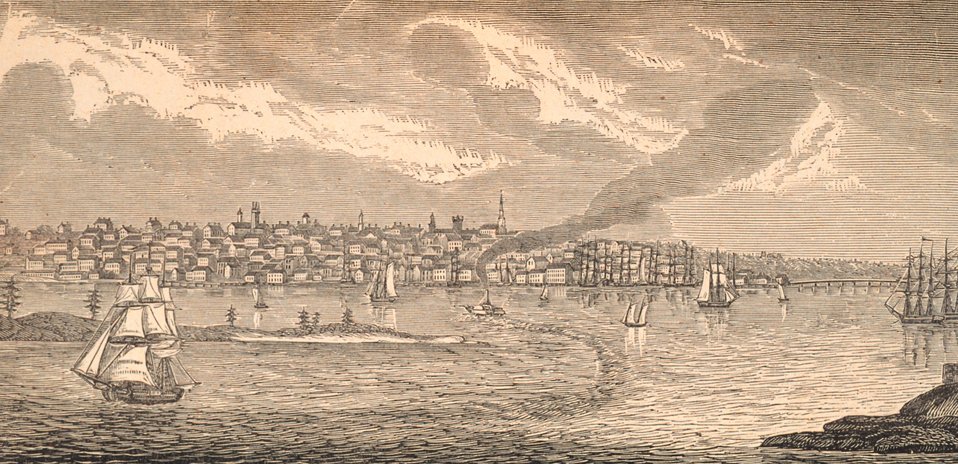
A southeastern view of New Bedford as seen from Fairhaven. Palmer's Island is in the left center of the picture and bridge to Fairhaven is on the right. In: Historical Collections ... of Every Town in Massachusetts. 1841.